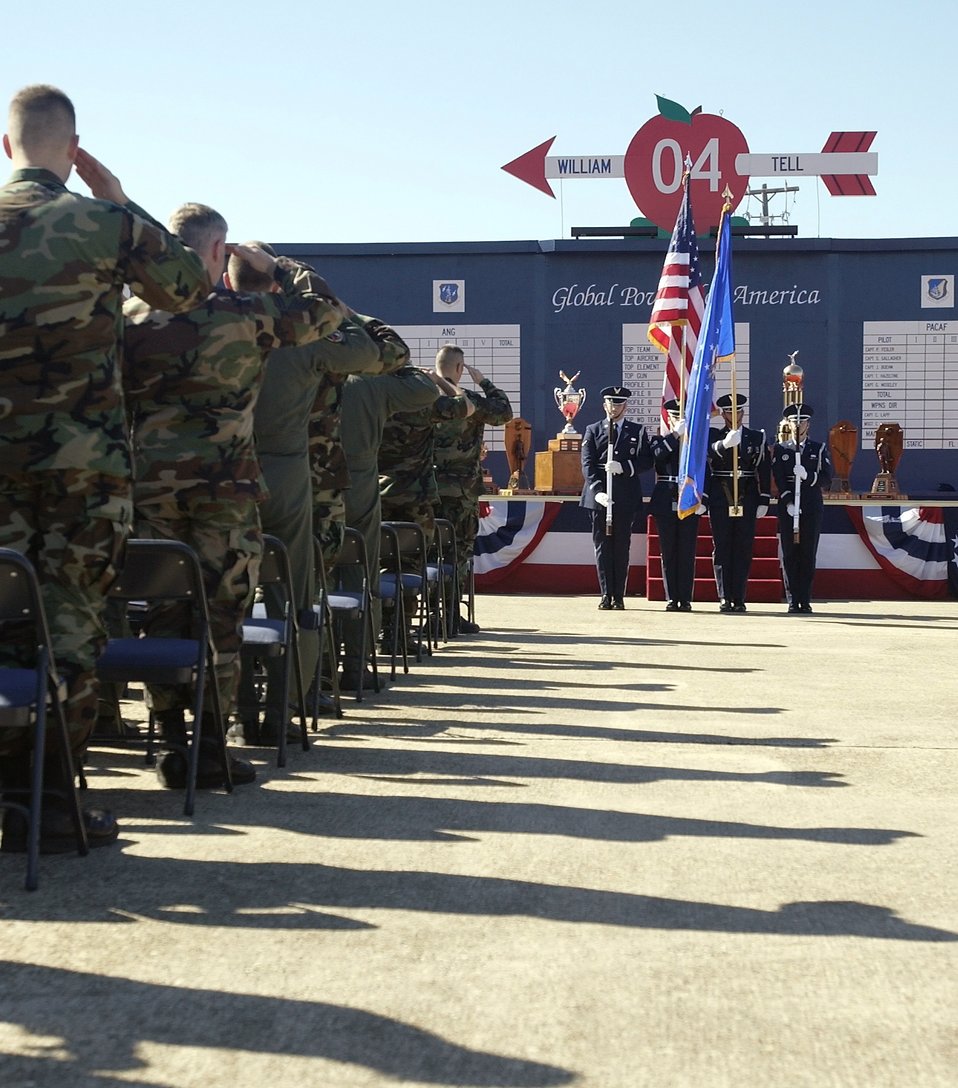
Opening ceremony

TYNDALL AIR FORCE BASE, Fla. - Airmen salute during the opening ceremony of William Tell 2004 here Nov. 8. This is the 50th anniversary of the William Tell competition, which tests an aircrew's ability to perform under combat conditions. The two-week competition will challenge pilots, weapons loaders and maintainers from five F-15 fighter wings.